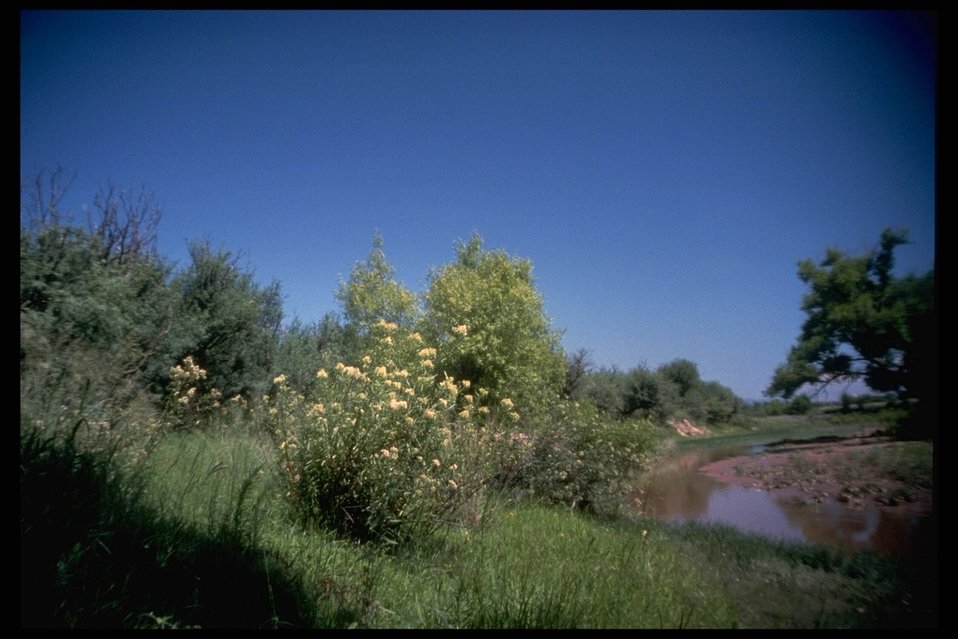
The 45,000-acres of public land in southeastern Pima County and northeastern Santa Cruz County, are home to the Empire and Cienega ranches.